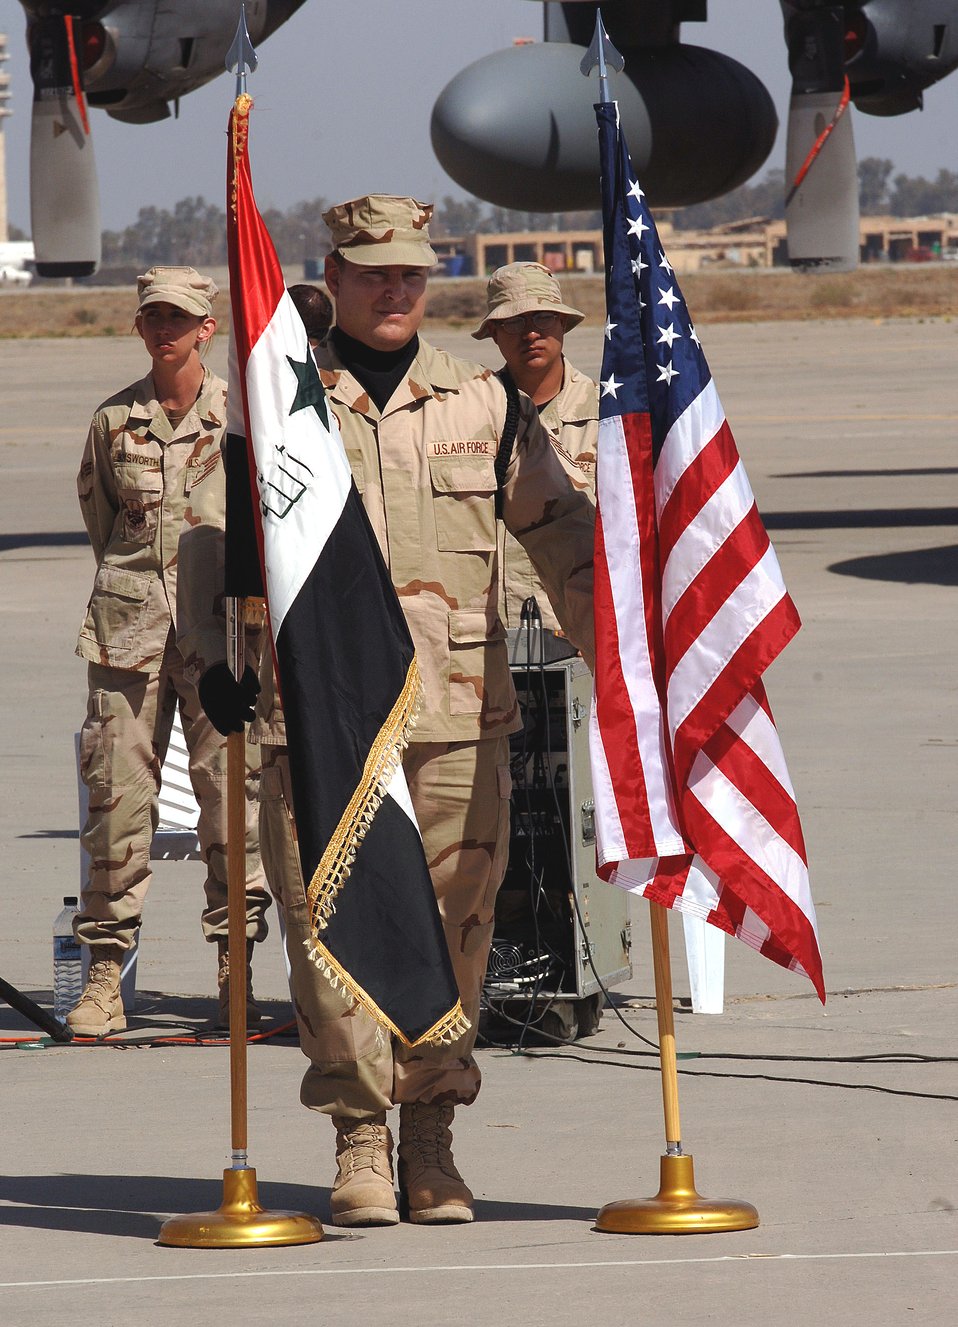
Iraqi Air Force history

Staff Sgt. William Bennett holds the U.S. and Iraqi flags at the stand-up ceremony for the Iraqi Air Force's 23rd Squadron at New Al Muthana Air Base, Iraq, Tuesday, March 7, 2006. The event culminated more than a year of training by U.S. Airmen with the Multinational Security Transition Command Coalition Air Force Transition Team. This is the first post-Saddam Hussein era Iraqi Air Force base and squadron. Sergeant Bennett is a member of the 447th Air Expeditionary Group honor guard.